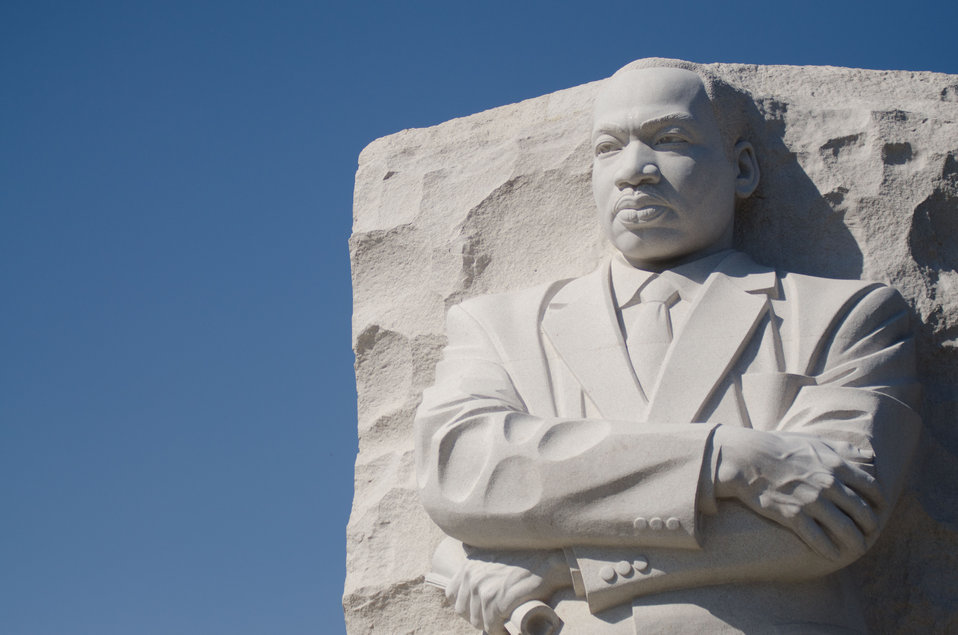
Martin Luther King, Jr. Memorial in Washington, DC, on Saturday, October 8, 2011.